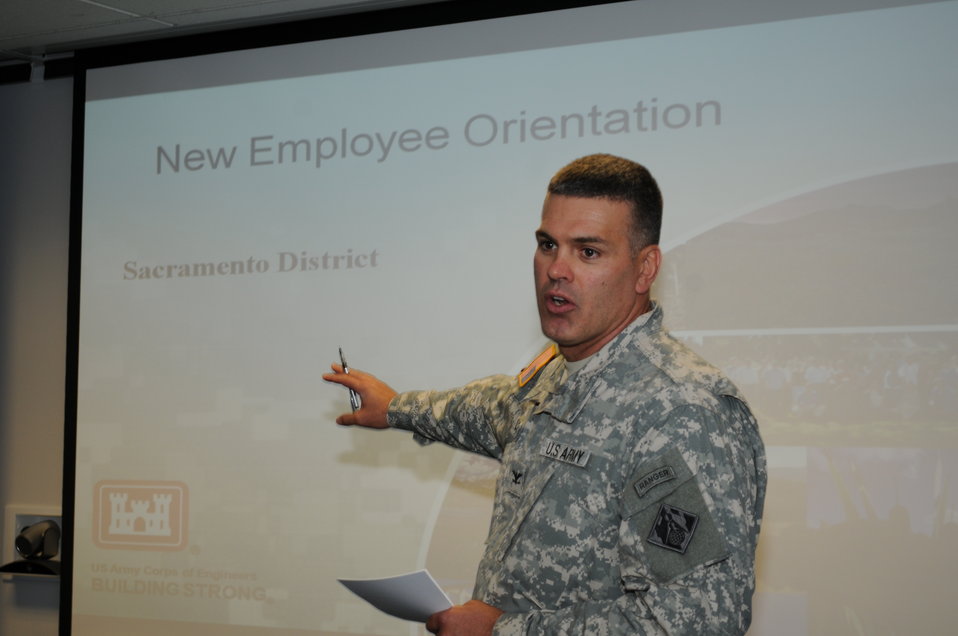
Col. Bill Leady addresses LDP II grads

Col. Bill Leady, commander of the U.S. Army Corps of Engineers Sacramento District, addresses graduates from the district’s tier two leadership development program July 26. Leady thanked the graduates for their time and efforts in revising the district’s new employee orientation and stated his commitment to the leadership development program. 'I am committed to the ongoing success of the leadership development program, and to carry this effort forward. It is my job to make sure that your good work does not die on the vine,' said Leady.